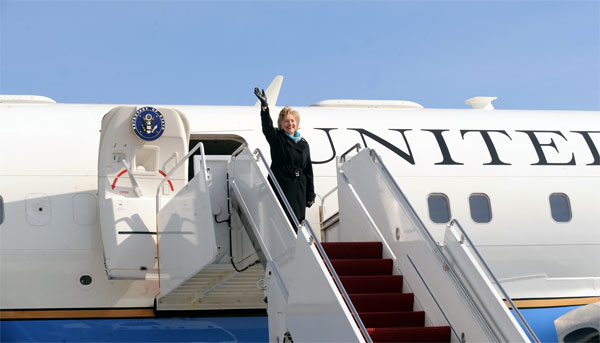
Secretary Clinton Leaves for Asia

U.S. Secretary of State Hillary Clinton departs Andrews Air Force Base for her first official trip to Asia where she will visit Japan, Indonesia, South Korea, and China.Photo Credit February 16, 2009.